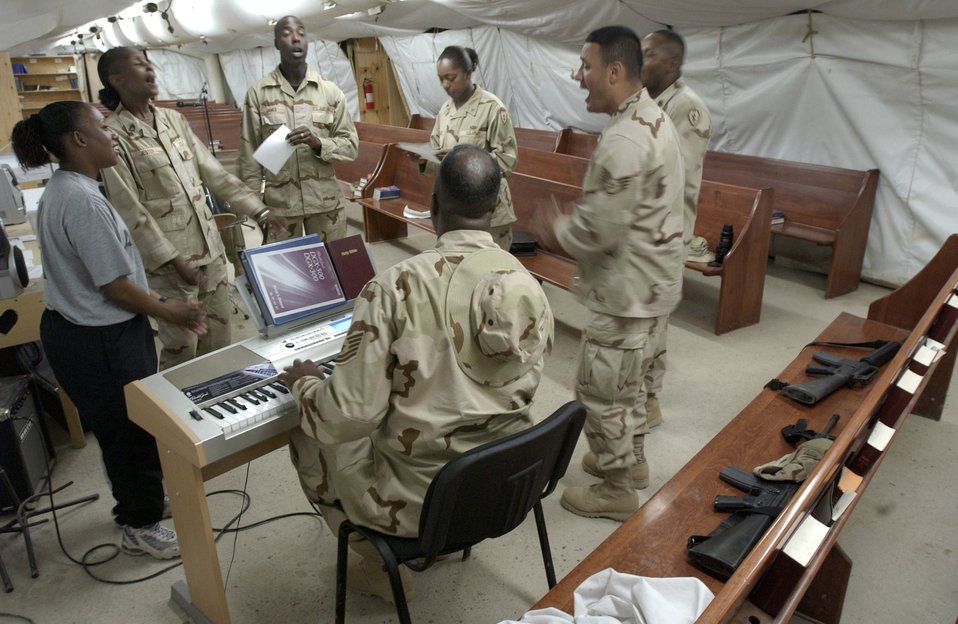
Guardsmen making K-2 connections

KARSHI-KHANABAD AIR BASE, Uzbekistan -- Three times each week, Airmen and Soldiers set aside their weapons and come together for an hour of choir practice. Members of the